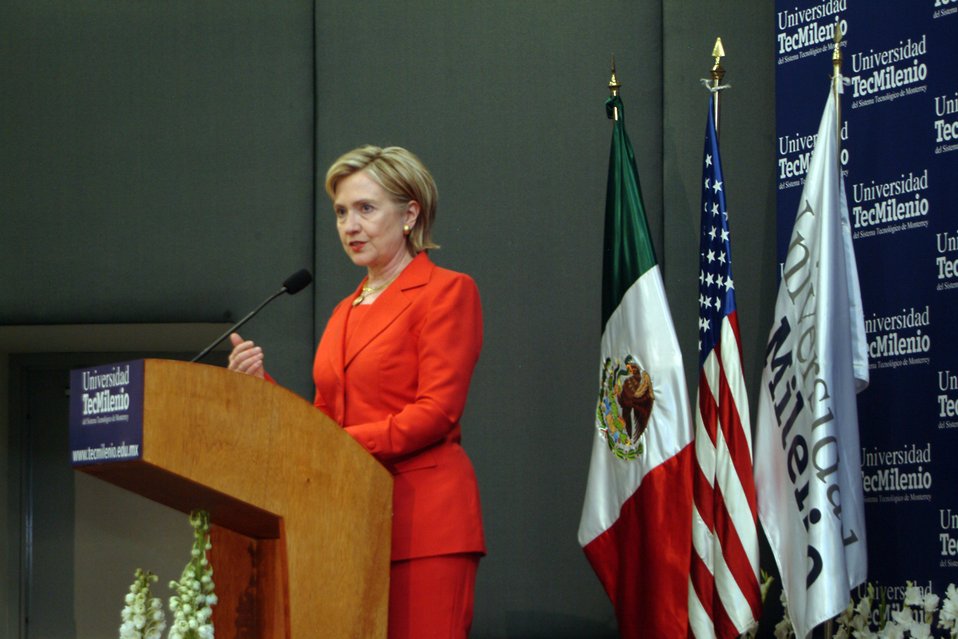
Secretary Clinton at TecMilenio University

U.S. Secretary of State Hillary Rodham Clinton answers students' questions during a town hall meeting at Tecmilenio University in Monterrey, Mexico March 26, 2009.